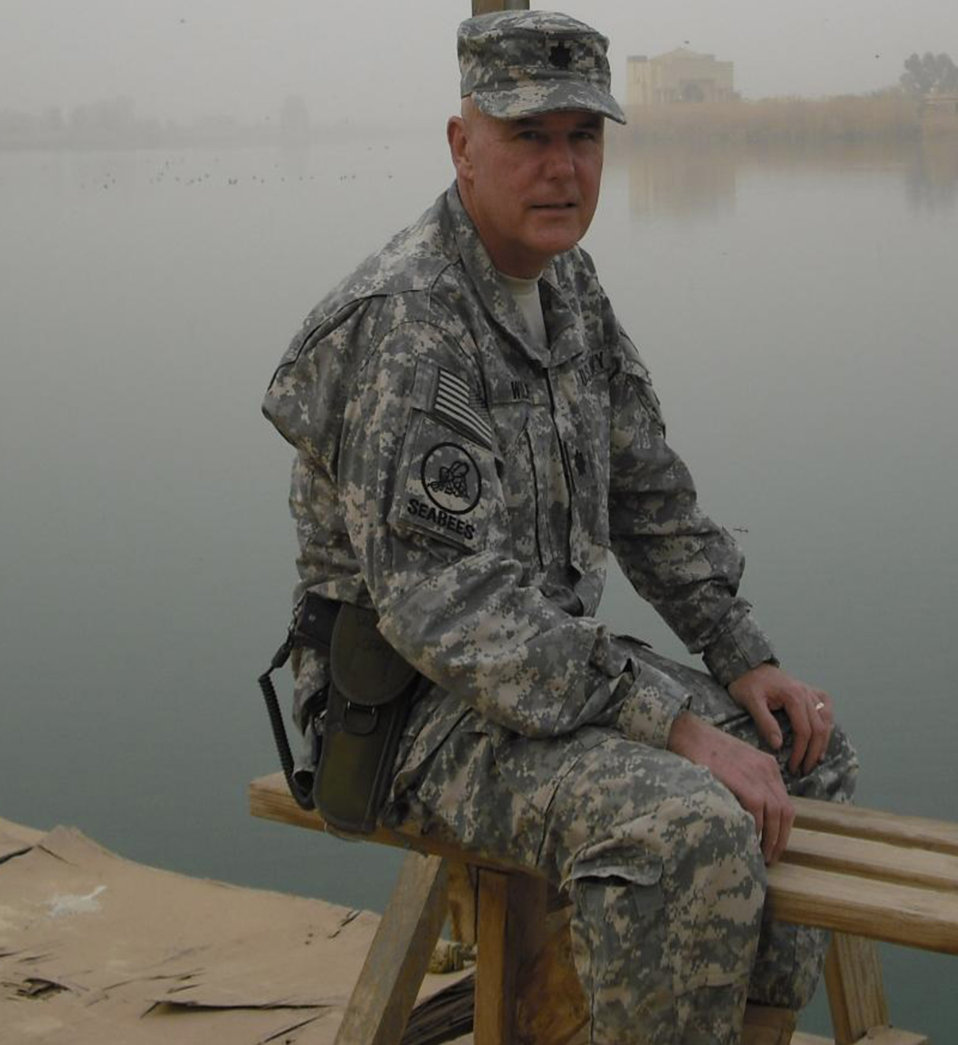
Vandenberg deputy commander killed in Iraq

Naval Reserve Cmdr. Duane Wolfe was performing his reserve duties in the Navy when he was killed by injuries received during an improvised explosive device attack. Commander Wolfe served as the civilian deputy commander of the 30th Mission Support Group at Vandenberg Air Force Base, Calif. During his deployment, he was assigned as officer in charge of the U.S. Army Corps of Engineers Al Anbar Area Office, Al Asad Air Base, Iraq.